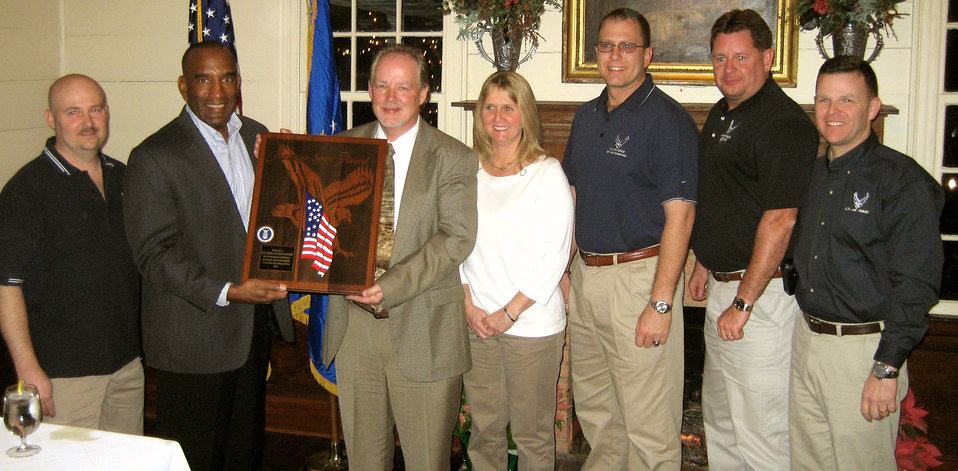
Air Force presents top civic award to outdoor TV show

Brig. Gen. A.J. Stewart presents Dennis and Angela Lewis the American Spirit Award during a ceremony Jan. 21 in Perry Ga. Air Force Recruiting Service presented the service's top civic award to program hosts and Southern Woods-N-Water TV for their continued support of Air Force recruiting. Representing the 336th Recruiting Squadron at the presentation were, from left, Master Sgt. Billy Farmer, Tech. Sgt. Thad Smith, Master Sgt. Robert Dixon and Lt. Col. Richard Van Hook. General Stewart is the commander for AFRS.